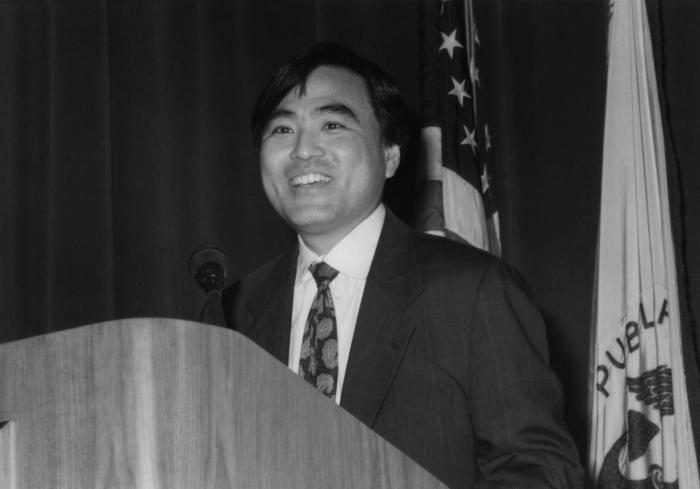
This photograph showed Dennis Hayashi, the highest ranking Asian-American in the first Clinton Administration, as he was speaking to Centers for Disease Control (CDC) personnel in 1994.